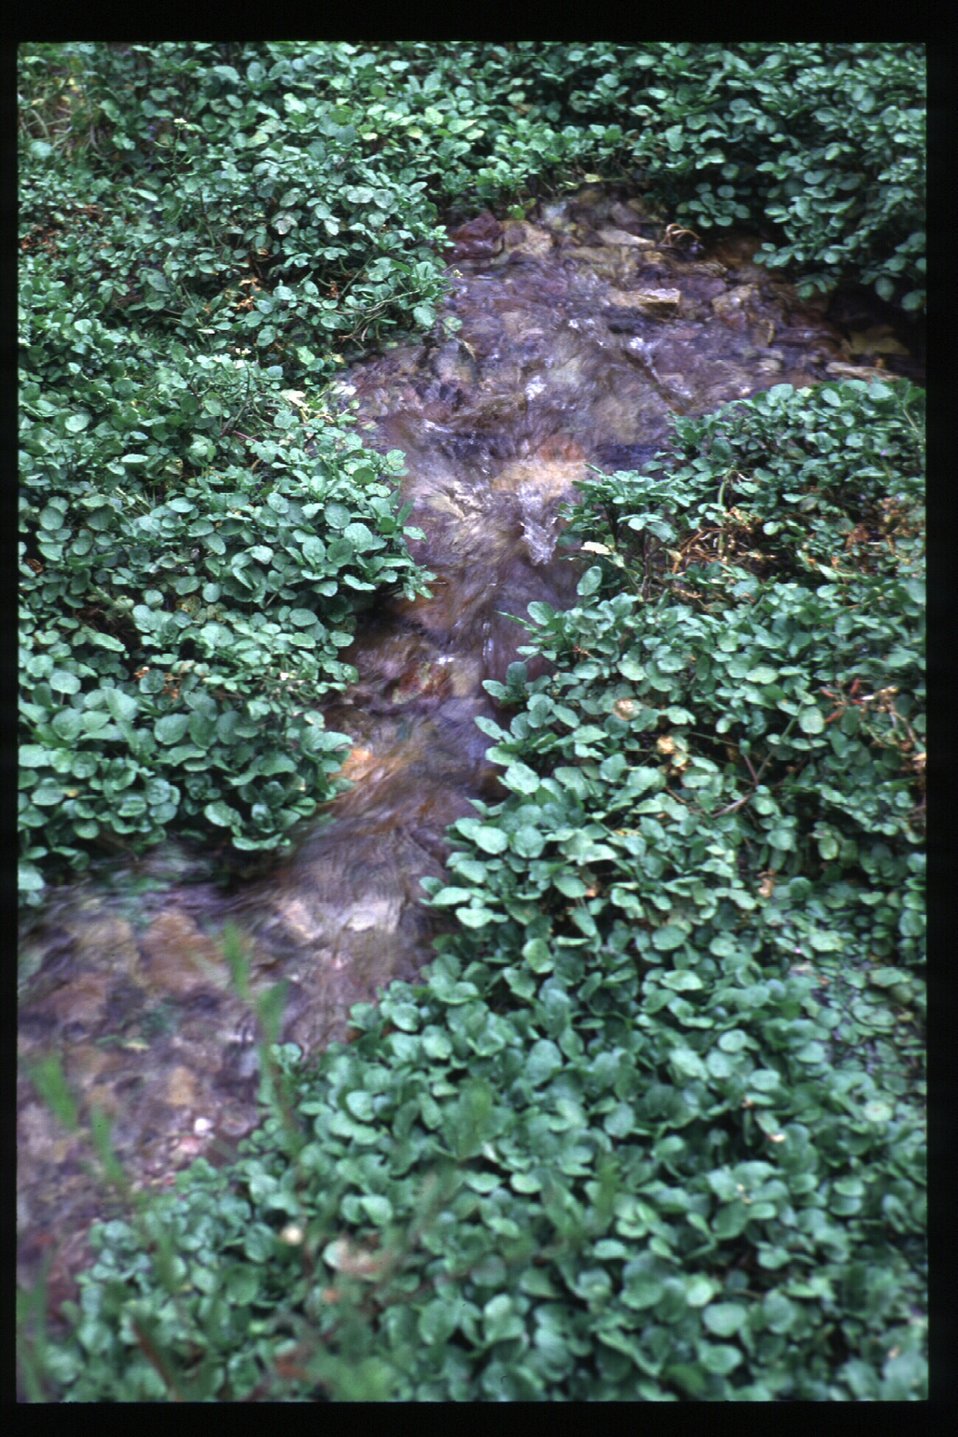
Scenics and recreation South Snake River Cress Creek Trail Recreation Shoshone Field Office USRD Upper Snake River District